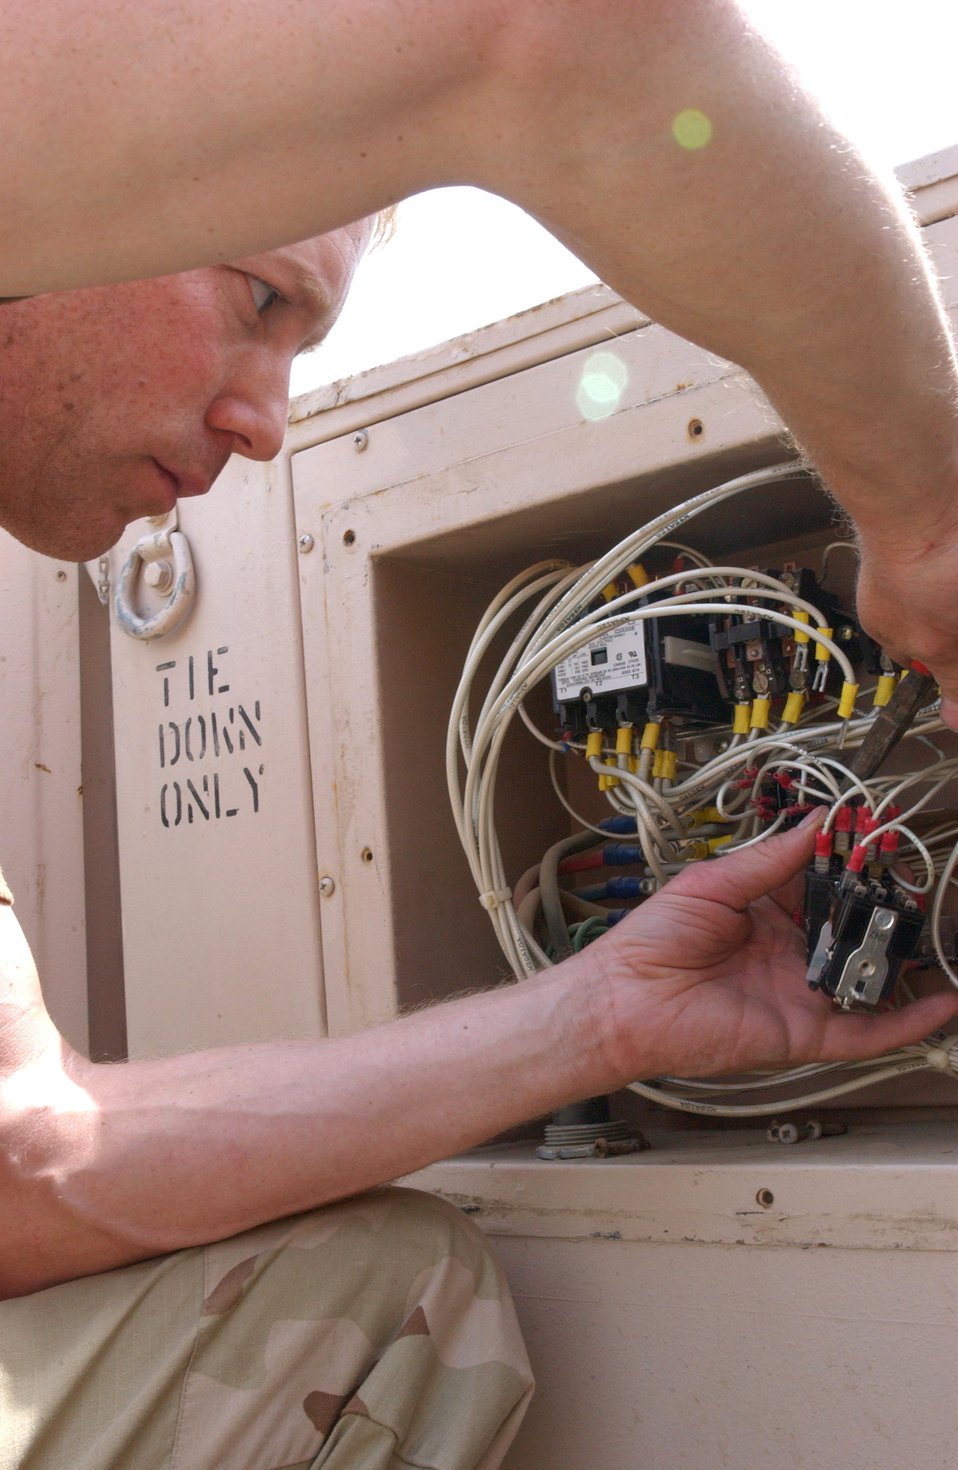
HVAC: Keeping you cool

Tech. Sgt. Bruce Burton replaces a relay on an environmental conditioning unit at Ali Base, Iraq. Sergeant Burton is with the 407th Expeditionary Civil Engineer Squadron heating, ventilation and air conditioning flight. He is deployed from the Vermont Air National Guard's 158th Fighter Wing.